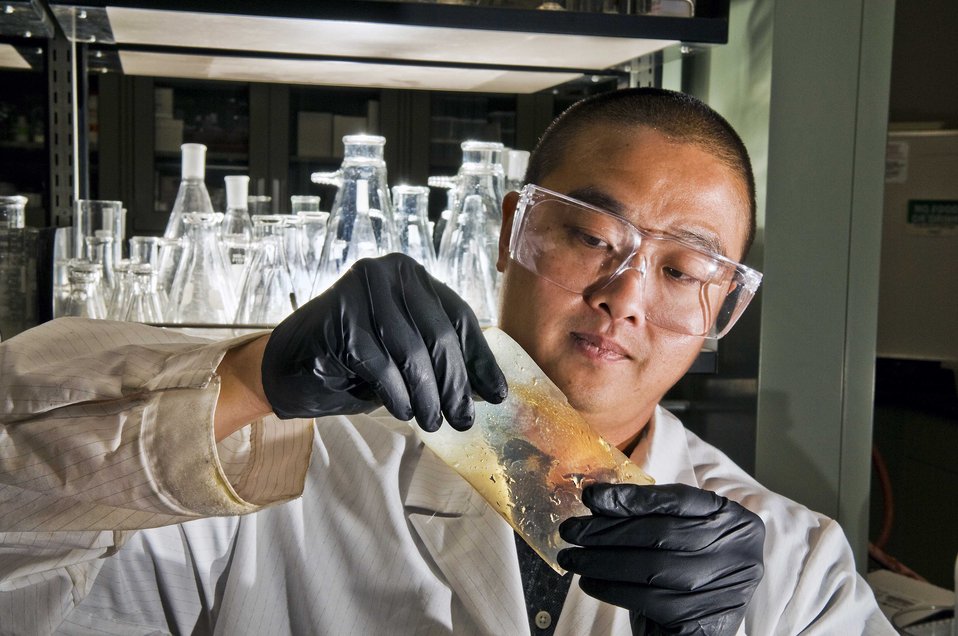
Sandia researcher Cy Fujimoto demonstrates his new flexible hydrocarbon polymer electrolyte membrane (PEM), which could be a key factor in realizing a hydrogen car.

PEM fuel cells use oxygen from the air and pressurized hydrogen to crate electricity, heat and water (steam) as byproducts. The electricity powers the electric motor that turns the wheels of the car. Sandia has developed a PEM using a different material that appears to be as durable as current PEM's but which also operates well in both dry and humid environments, unlike current PEM's.